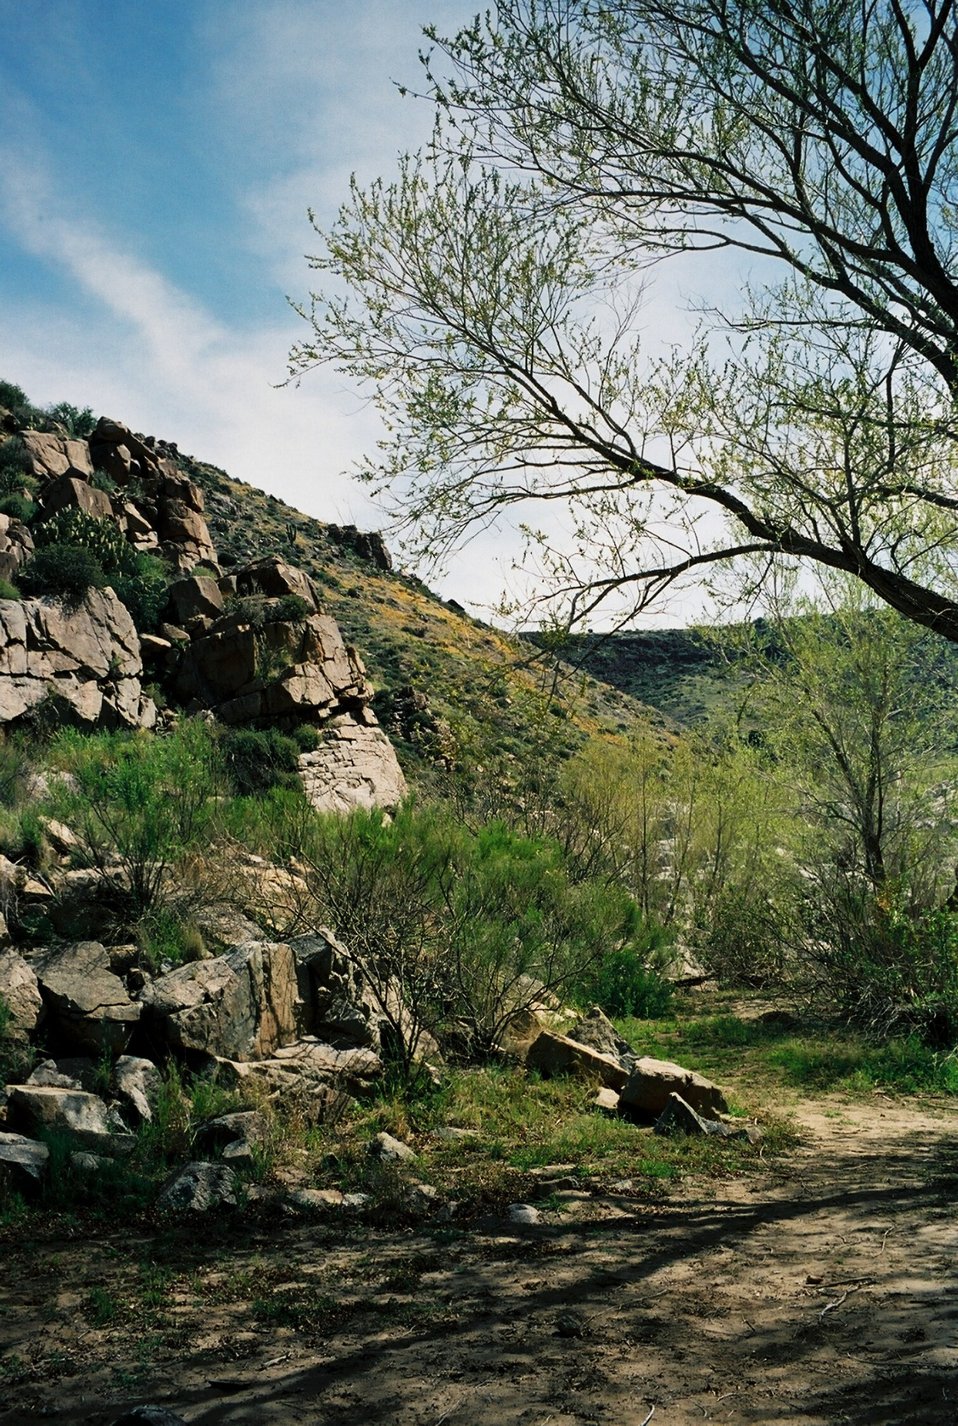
Agua Fria National Monument area.